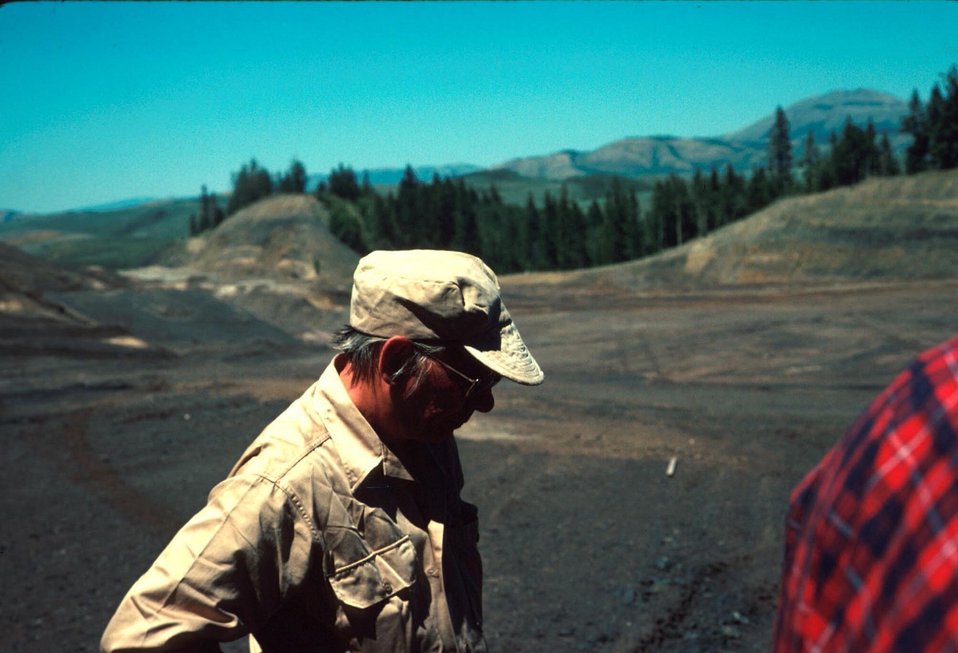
Upper Snake River District